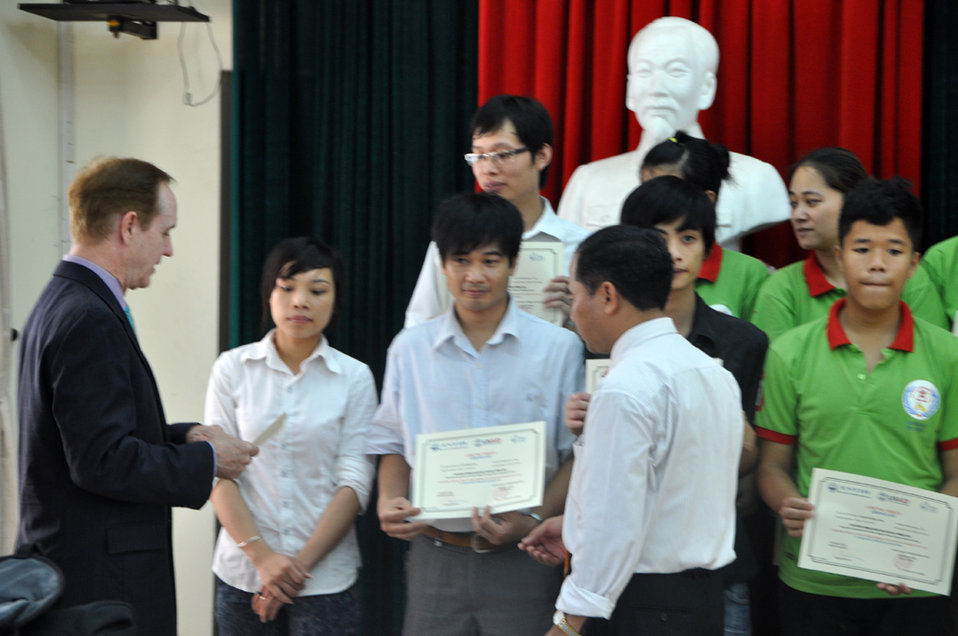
USAID Mission Director Francis Donovan participate in graduation of IT students in Hanoi on June 22, 2011.